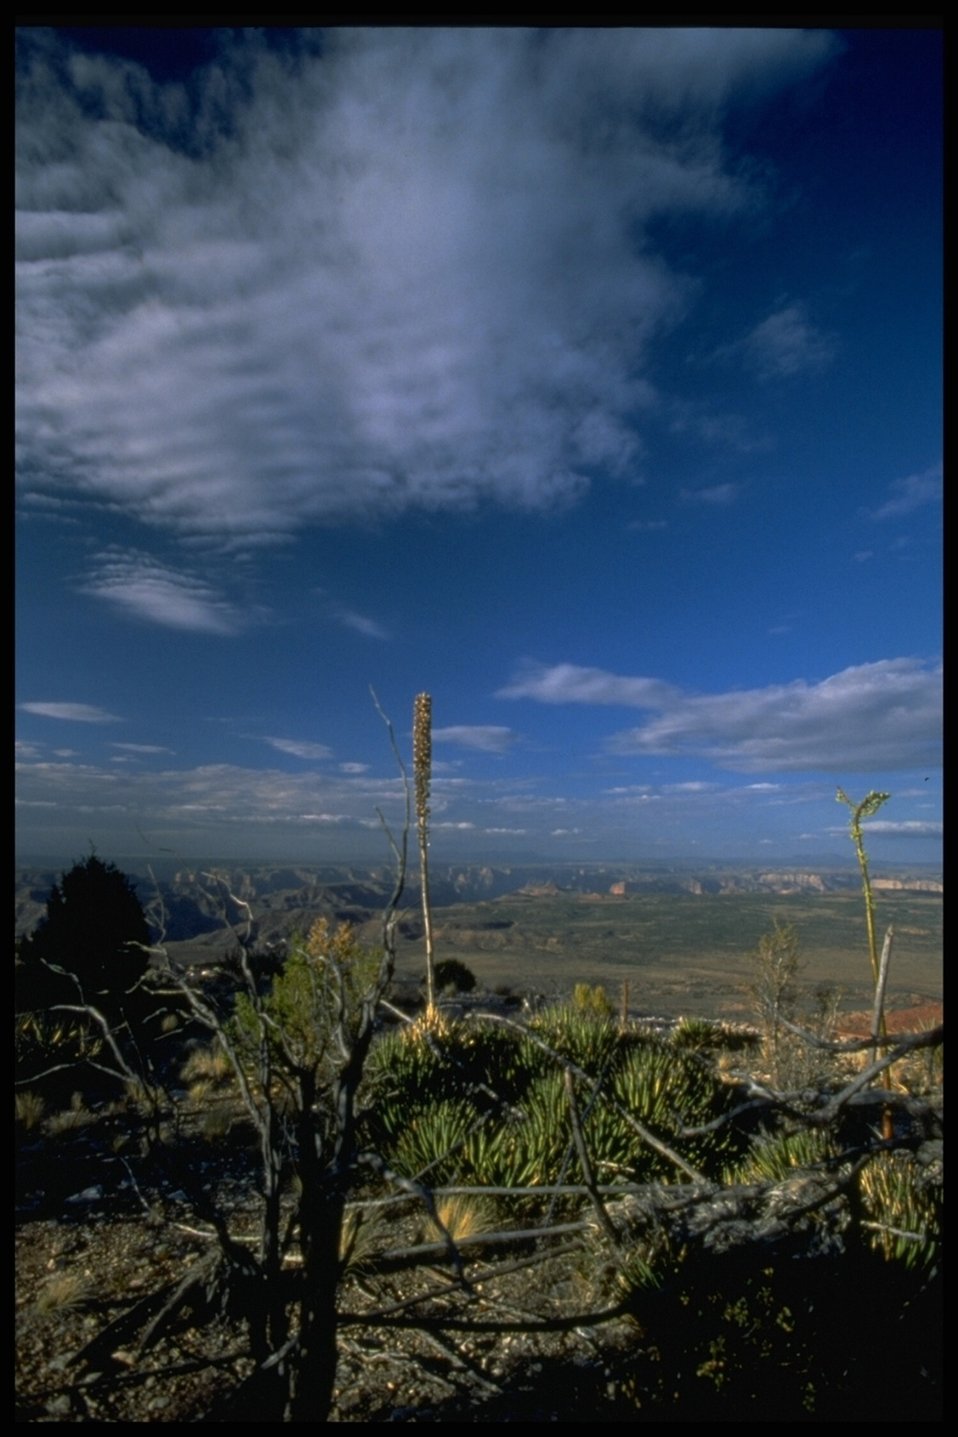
A dark sky at the Parashant National Monument with a view of the canyon below.